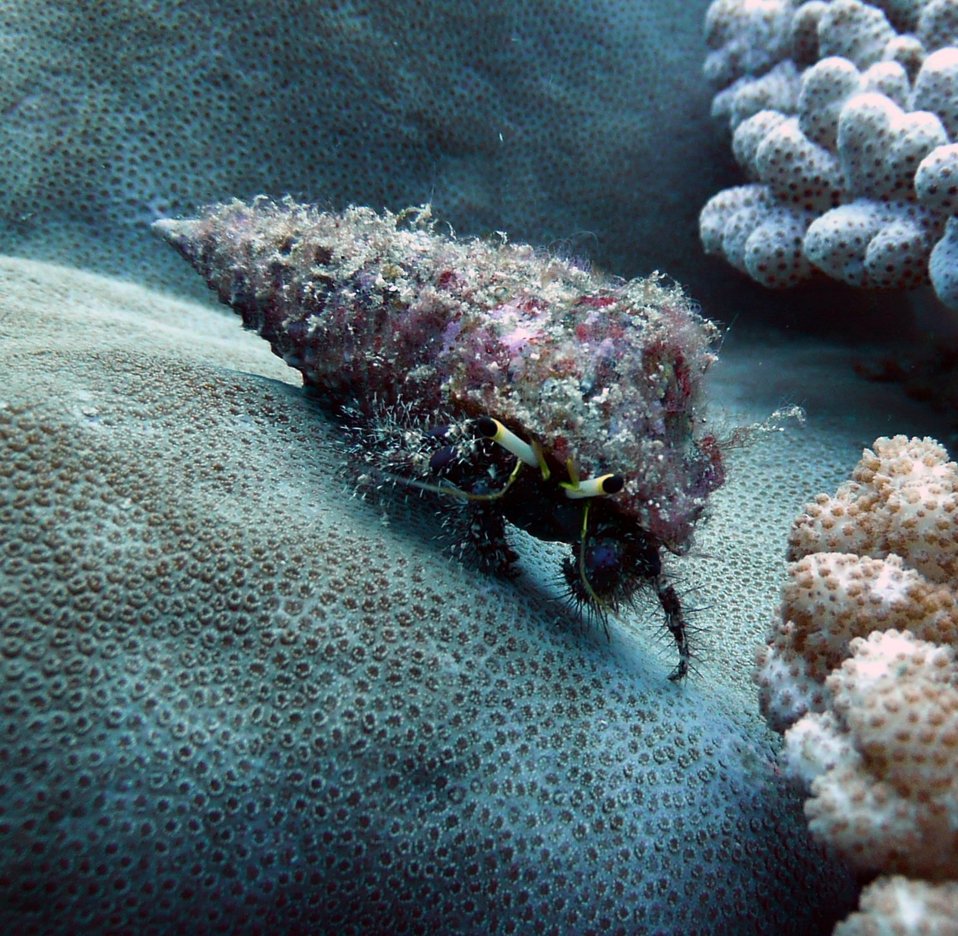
Hermit crab with stalked eyes piering out of protective shell